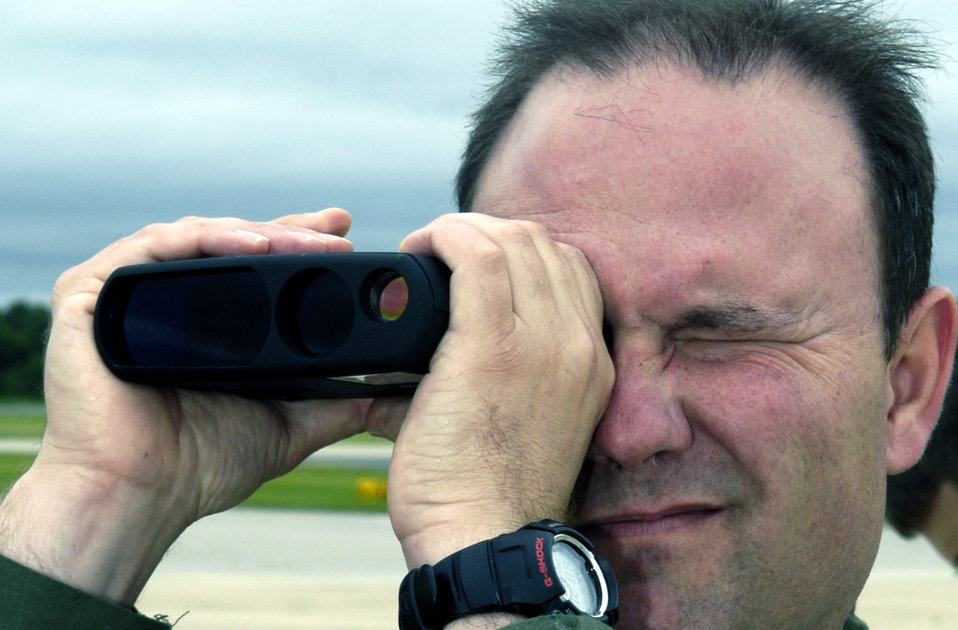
MOBILITY AIR FORCES MOBILE COMMAND AND CONTROL LEADERSHIP COURSE

Senior Master Sgt. Robert Finney uses a laser distance measuring device on the flightline at McGuire Air Force Base, N.J., during an airfield survey exercise June 4 for the Mobility Air Forces Mobile Command and Control Leadership Course. Sergeant Finney is with the Mississippi Air National Guard.